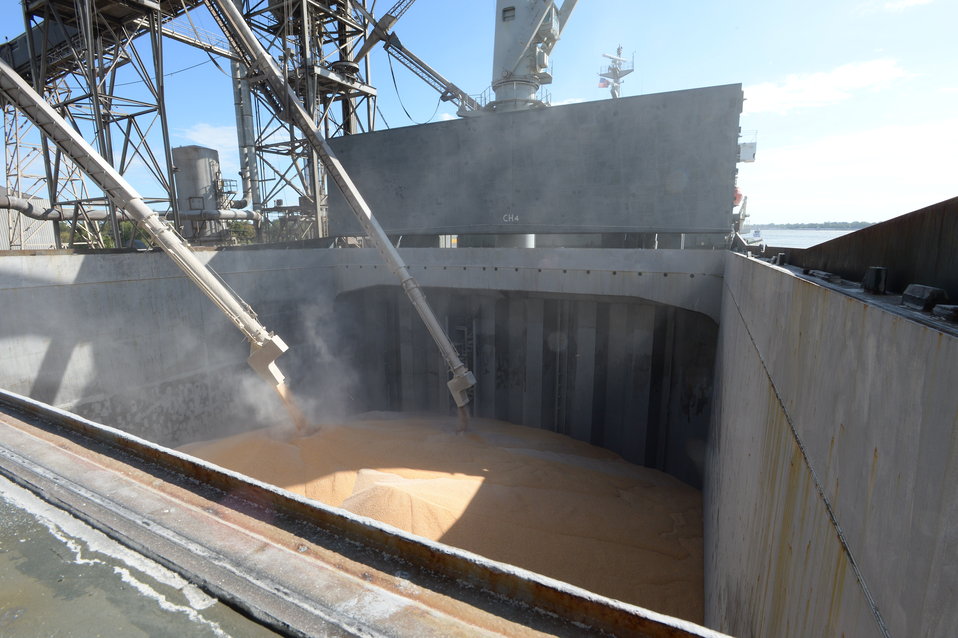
Grain is transferred from barges to to storage facilities near the Port of New Orleans in New Orleans, LA on Tuesday, Nov. 19, 2013.